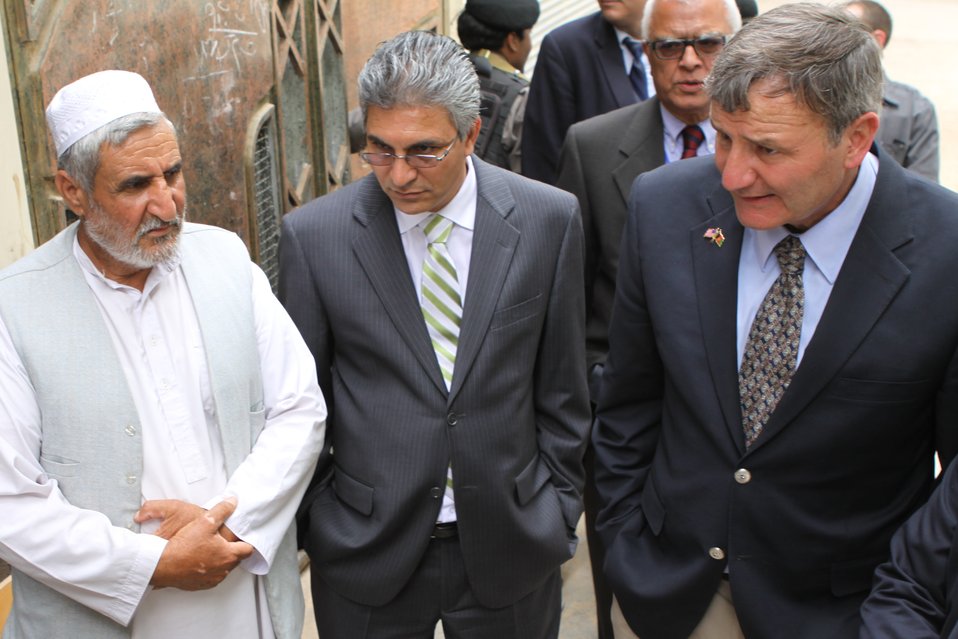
100525 Hirat Marble Conference 698